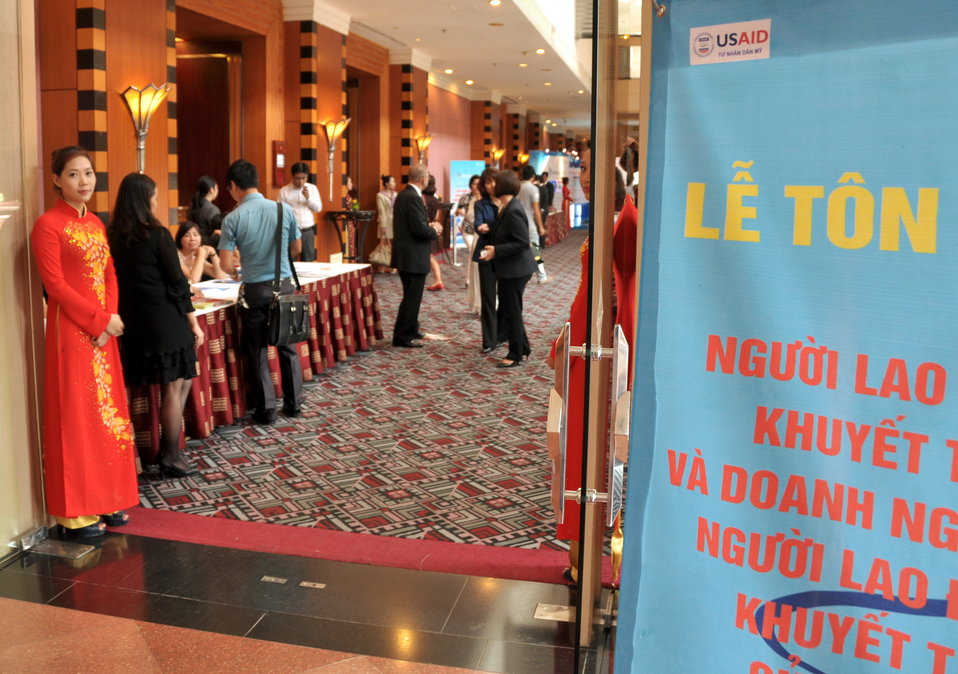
Blue Ribbon Employer Council Awards for Hiring Vietnamese with Disabilities

Hanoi, April 17, 2013